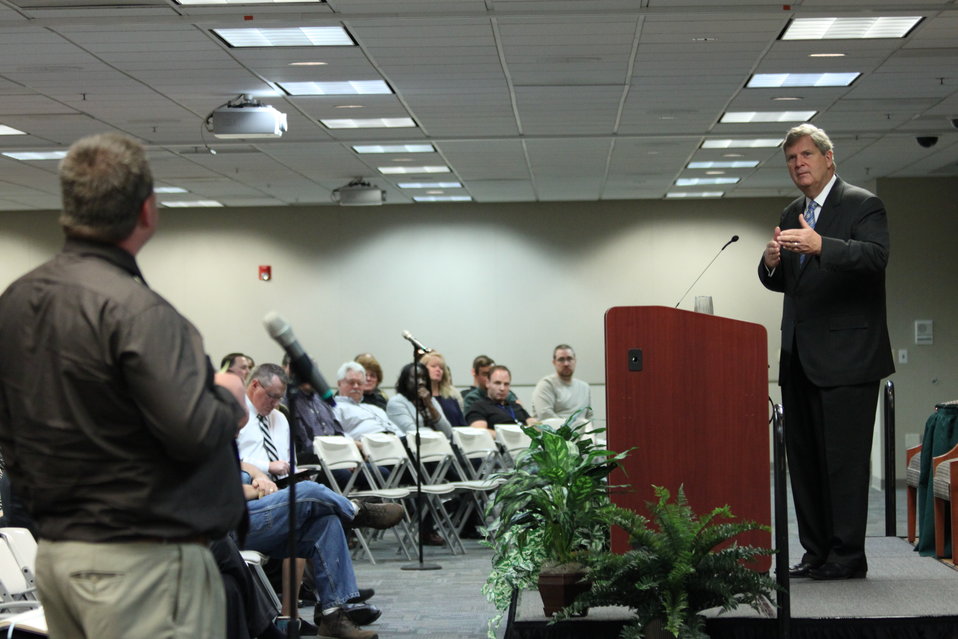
Agriculture Secretary Tom Vilsack addresses employee questions and concerns during a meeting of USDA employees in the Beacon Facility in Kansas City, MO on Wednesday, Oct. 23, 2013. The Secretary spoke to the group about their value to the Department and upcoming challenges that lie ahead.